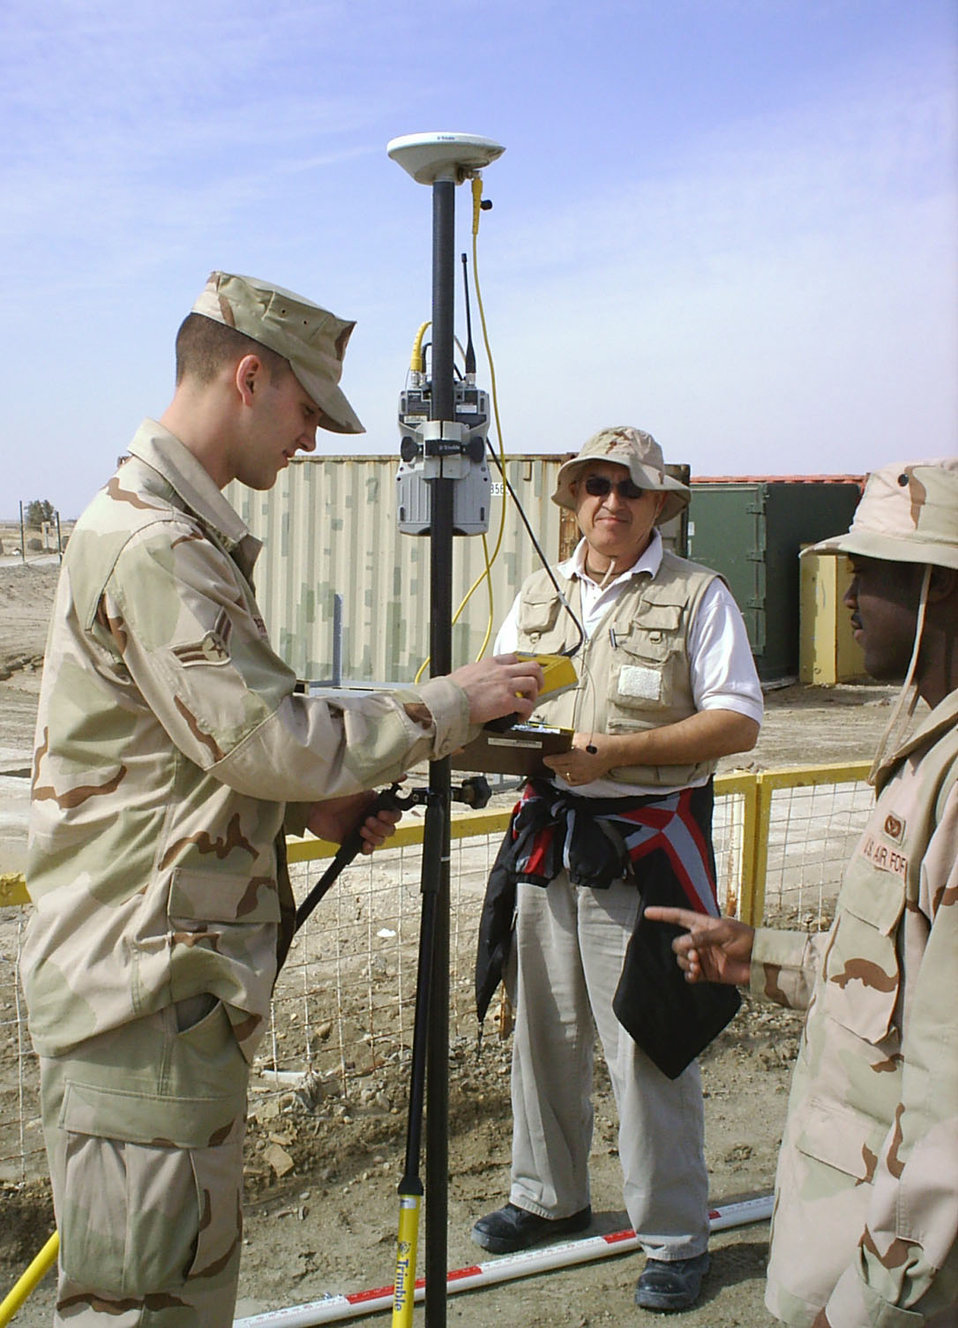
Airmen work with Soldiers to help Iraqi communities

TALLIL AIR BASE, Iraq -- (From Left) Airman 1st Class Mitchell Zipprich, Jan Noppen and Senior Airman Larry Washington monitor a unit used to gather information from a Global Positioning System satellite. The Airmen are part of a joint crew of Air Force and Army civil engineers who travel outside the perimeter to improve conditions for Soldiers and Iraqis. They are assigned to the 732nd Expeditionary Civil Engineering Squadron's Detachment 2, and Mr. Noppen is a contractor.